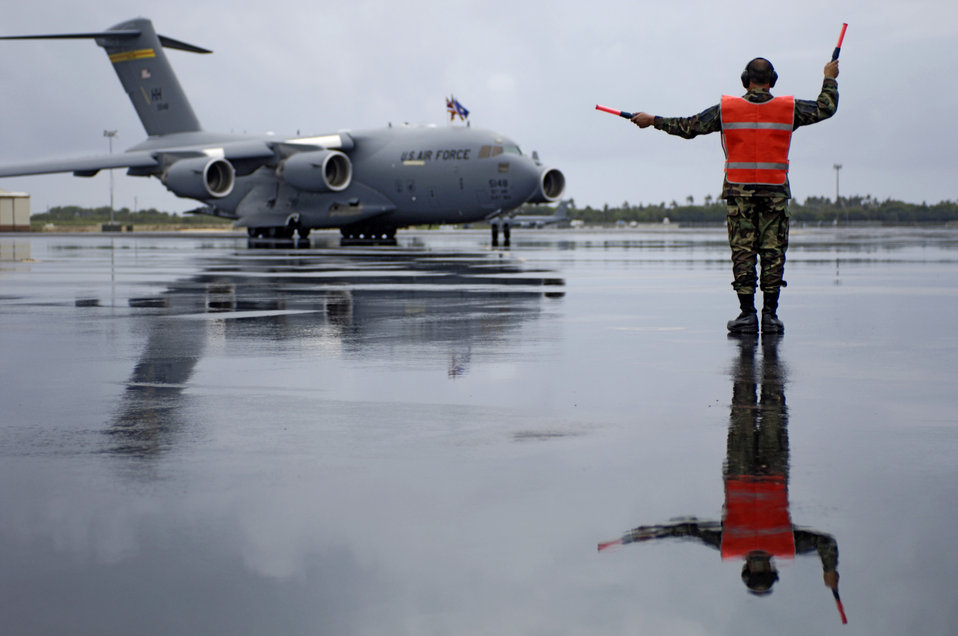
C-17 arrival

Master Sgt. Salvador Baltazar marshals in Hickam's third C-17 Globemaster III at Hickam Air Force Base, Hawaii, Tuesday, March 14, 2006. Hickam will be getting eight C-17s that will enhance military capabilities to rapidly deploy assets throughout the Pacific. Sergeant Baltazar is a Hawaii Air National Guard crew chief from the 154th Maintenance Squadron.